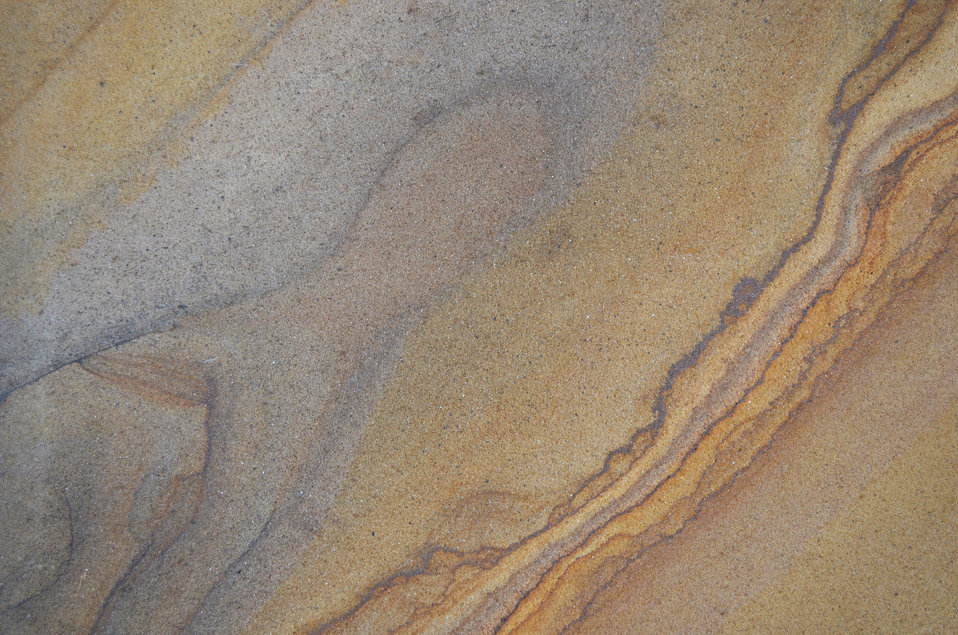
Wall of sandstone.